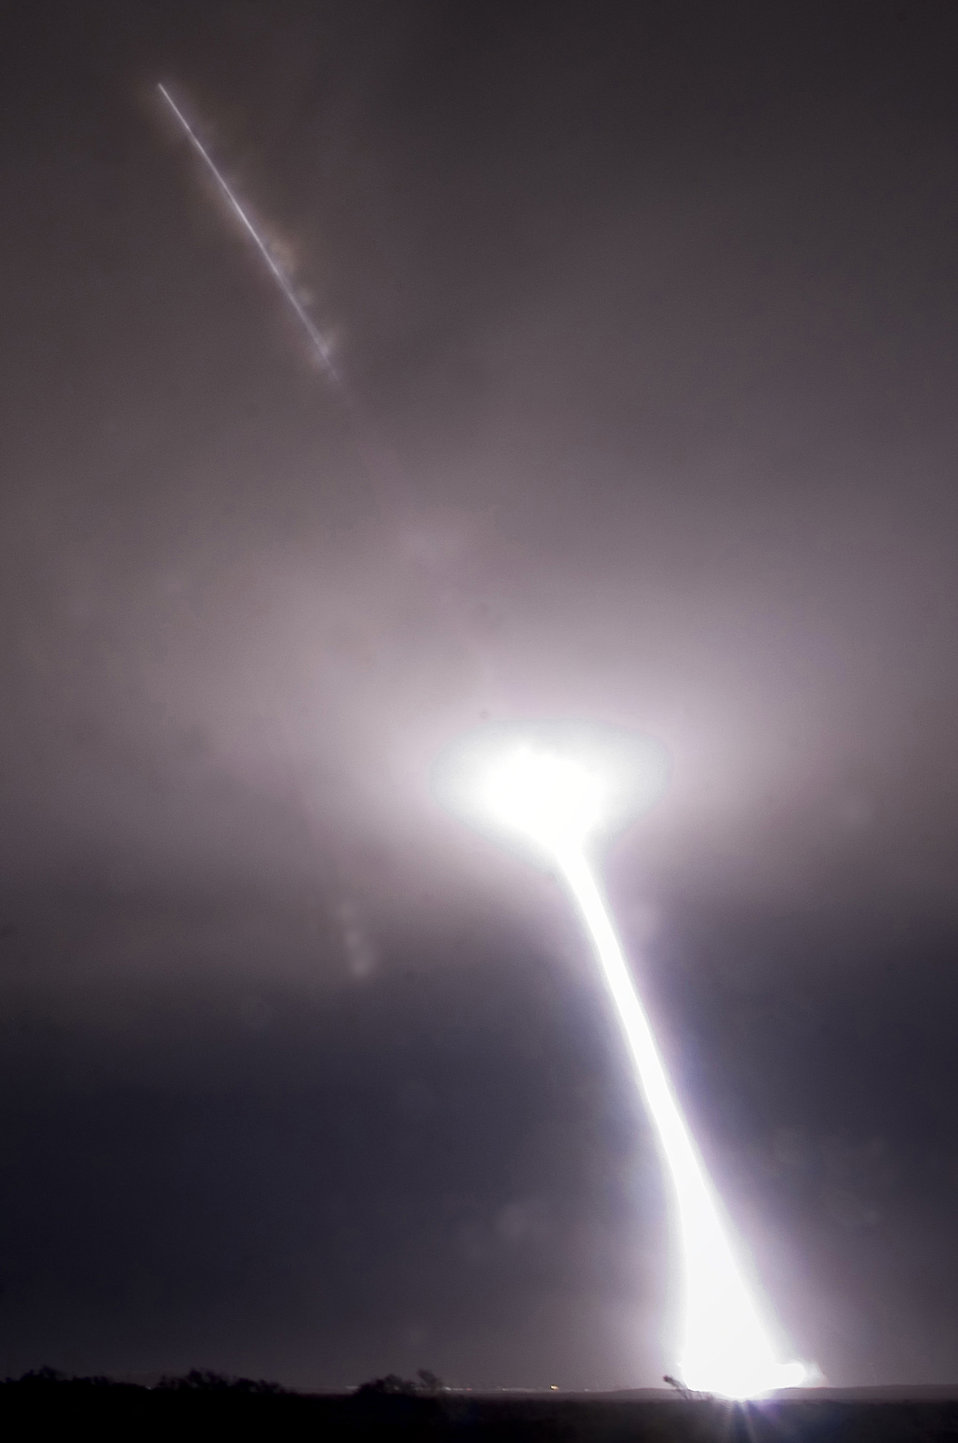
NASA WISE Delta II launch successful

Vandenberg Airmen launched a Delta II rocket Dec. 14, 2009, from Space Launch Complex 2 at Vandenberg Air Force Base, Calif. The rocket carried NASA's Wide-field Infrared Survey Explorer satellite.